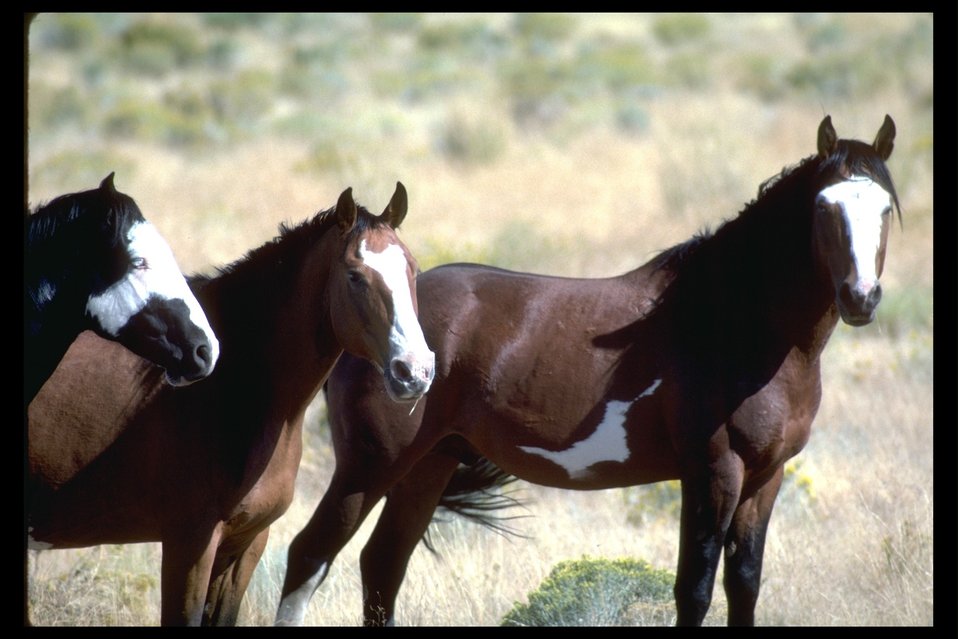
South Steens Pintos on the range in the South Steens HMA.